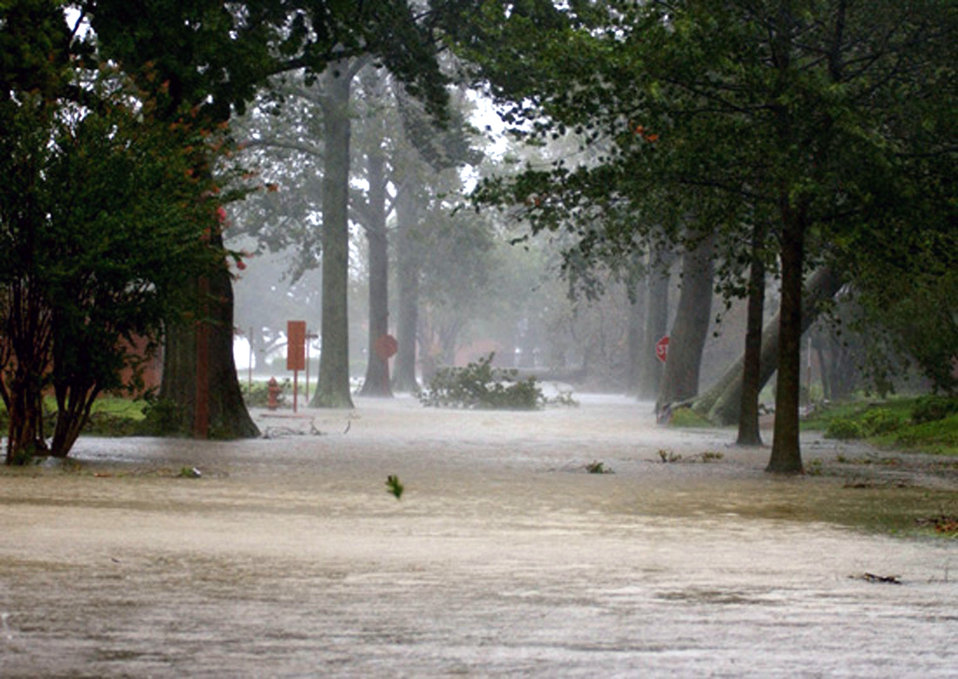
Roughin' the storm

LANGLEY AIR FORCE BASE, Va. -- Heavy rains and high winds from Hurricane Isabel knocked down several oak trees here as the storm blew through the base Sept. 18.